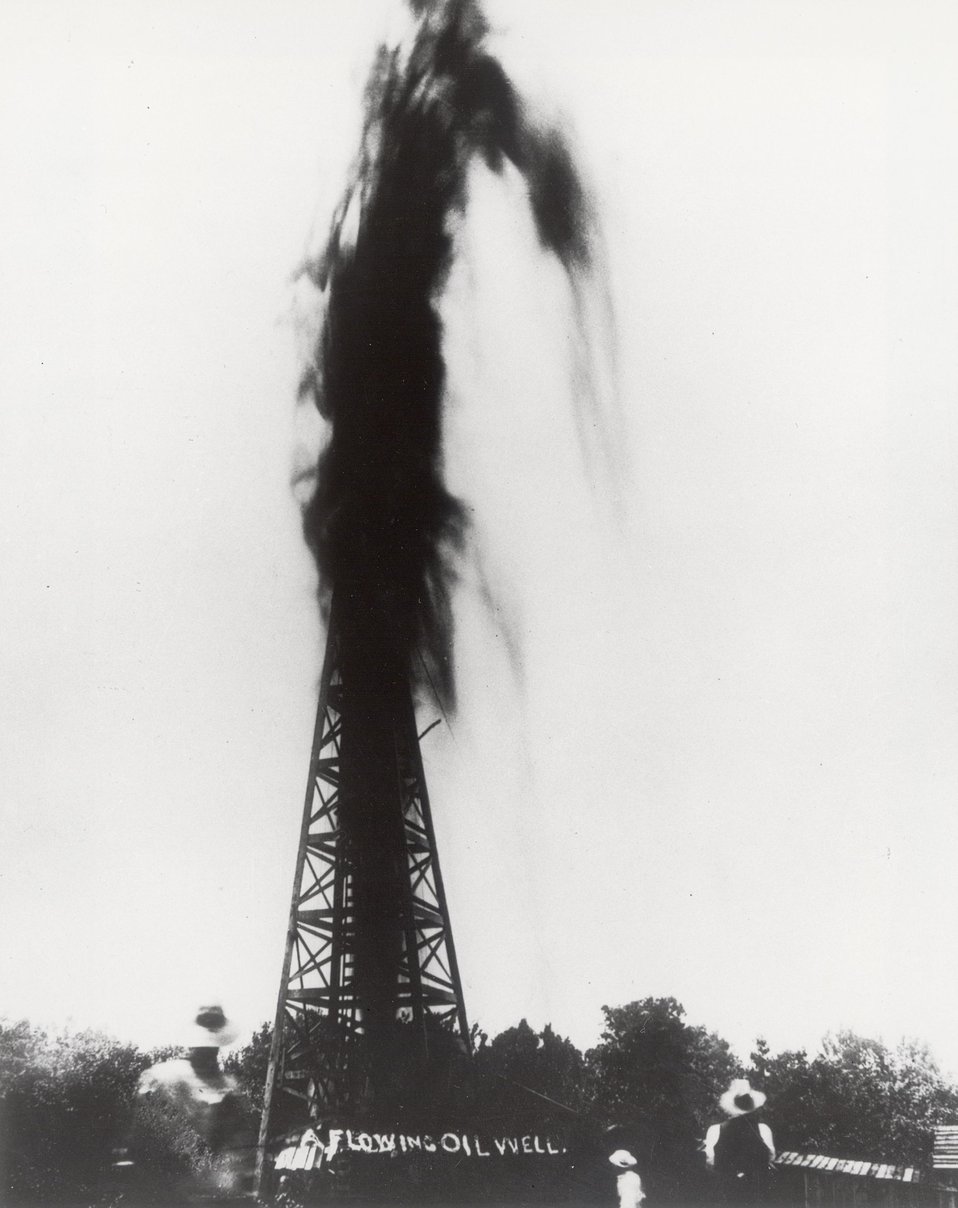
Flowing oil well, Oklahoma c.1919.